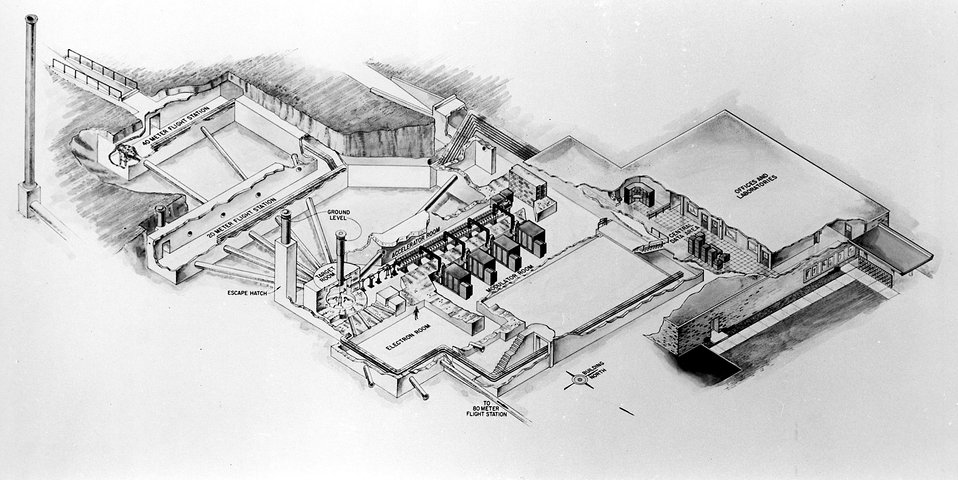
Layout of the Atomic Energy Commission's Oak Ridge Electron Linear Accelerator, Oak Ridge, Tenn. The accelerator is located in an underground room shown near the center of the drawing. c. 1972